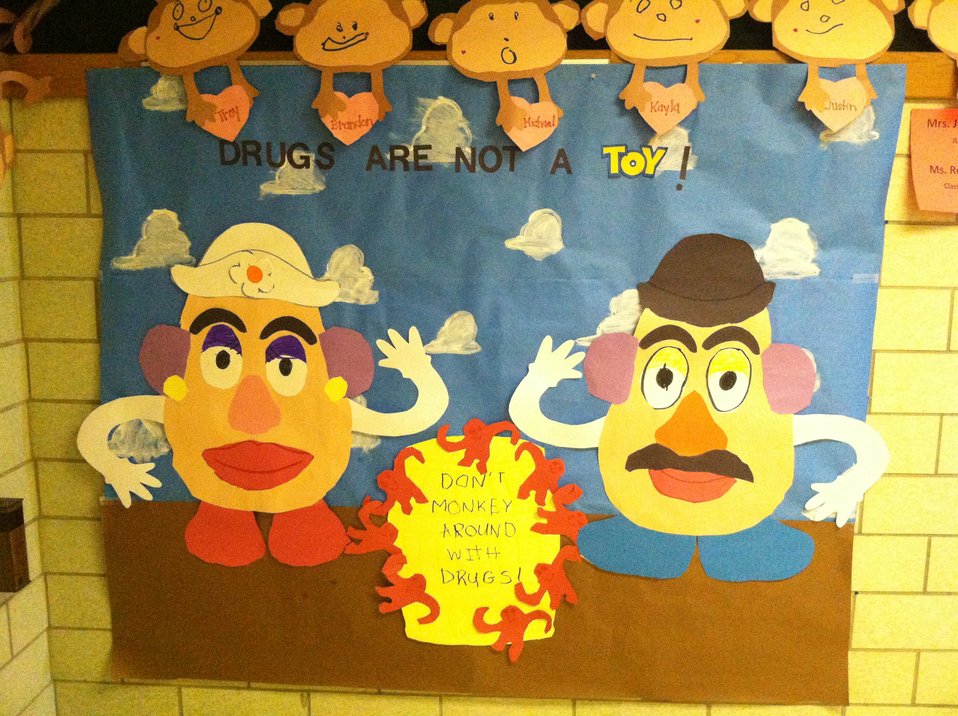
Poster Contest NDFW 2013

Alverton, Penn., Southmoreland Primary Center held a 'Jungle-themed' poster contest during its NDFW 2013 events.